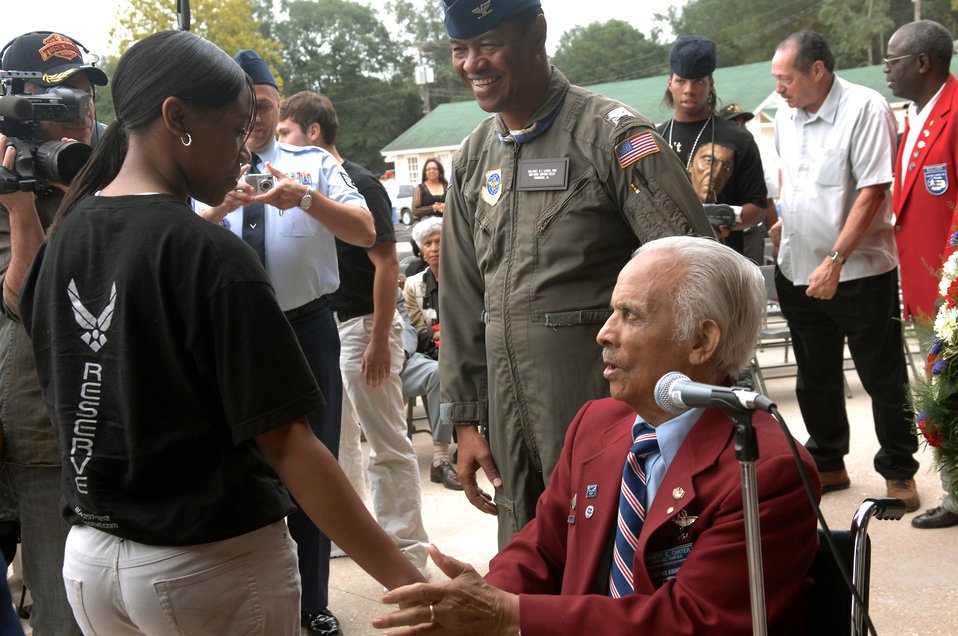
Remembering the Tuskegee Airmen

Retired Col. Herbert E. Carter shakes hands with an Airman who he just gave the oath of re-enlistment to Oct. 11 at Moton Field in Tuskegee, Ala. Colonel Carter is one of the original members of the Tuskegee Airmen and was on hand for the opening of the Tuskegee Airmen National Historic Site. Moton Field in the 1940s was the only primary flight training facility for the first African American pilot candidates in the Army Air Corps, these pilots are known as the Tuskegee Airmen.